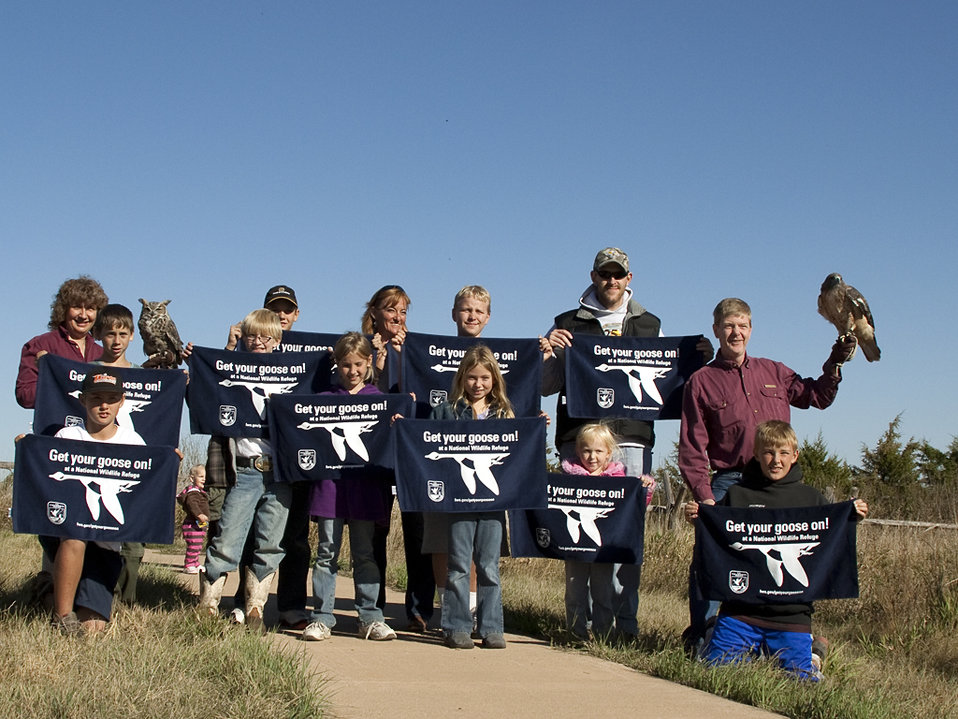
Get Your Goose On! - Raptor Style!

During Huron Wetland Management District's 2012 Prairie Festival, visitors were treated to an up close and personal look at various birds of prey.